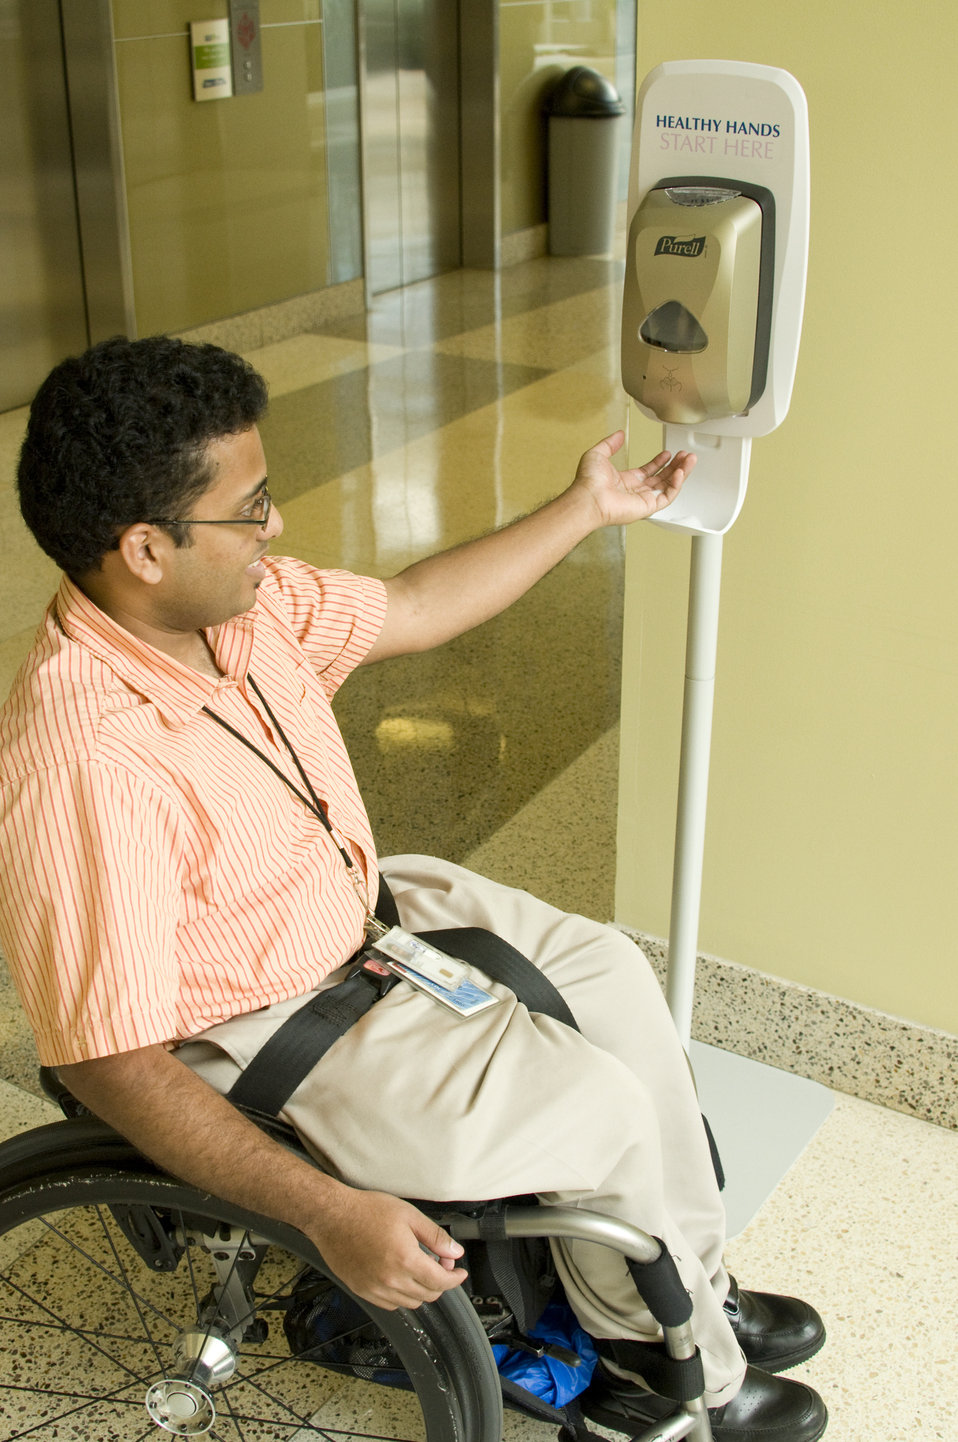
Before leaving one of the Centers for Disease Control's (CDC) Atlanta, Georgia-based facilities, this man seated in his wheelchair, had paused for just a moment to obtain some hand-sanitizer from an automatic dispenser. Note the height at which the dispenser was situated, making accessibility to its contents quite easy for any interested passersby.